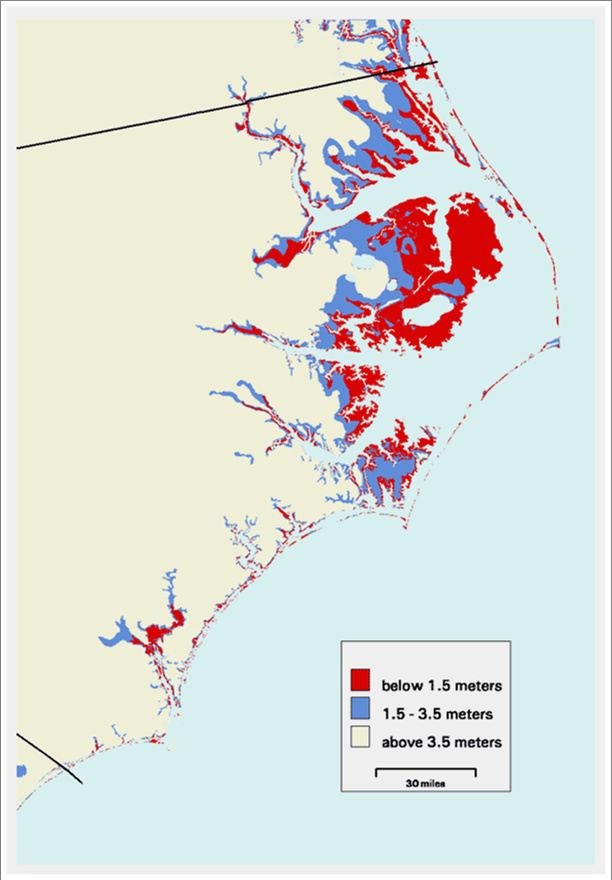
What would go underwater first

The Albemarle Region is the portion of North Carolina’s coast most vulnerable to sea level rise. The red area is the land that’s just 1.5 meters above sea level.